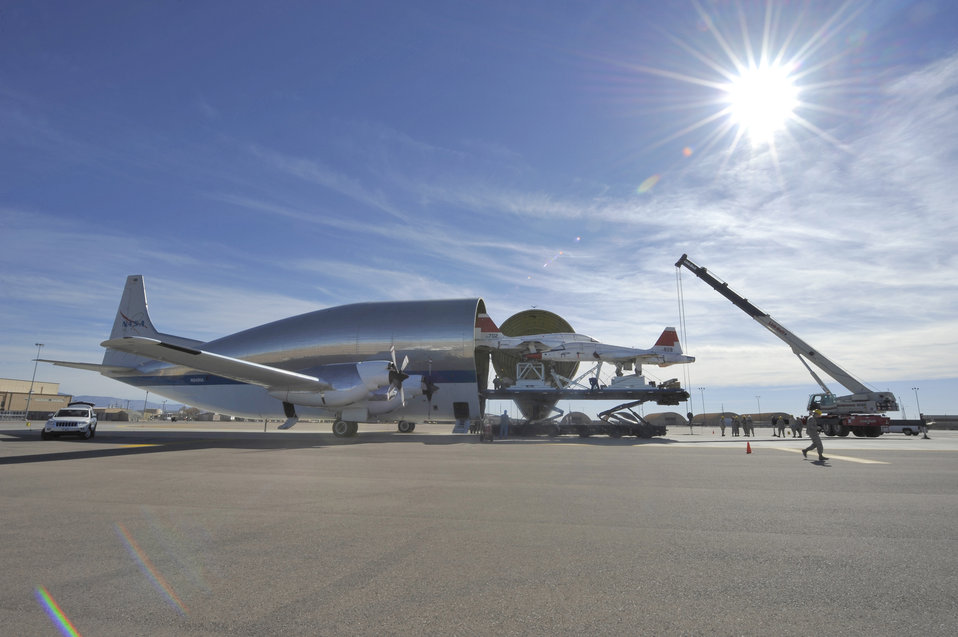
Arriving in style

Two T-38 Talons are unloaded from NASA's Super Guppy aircraft Dec. 14, 2010, after being shipped to Holloman Air Force Base, N.M. for inspection and repair. The base is the main depot in Air Combat Command for repairing the aircraft. After 450 flight hours at their operating location, the T-38s will come back for inspection.